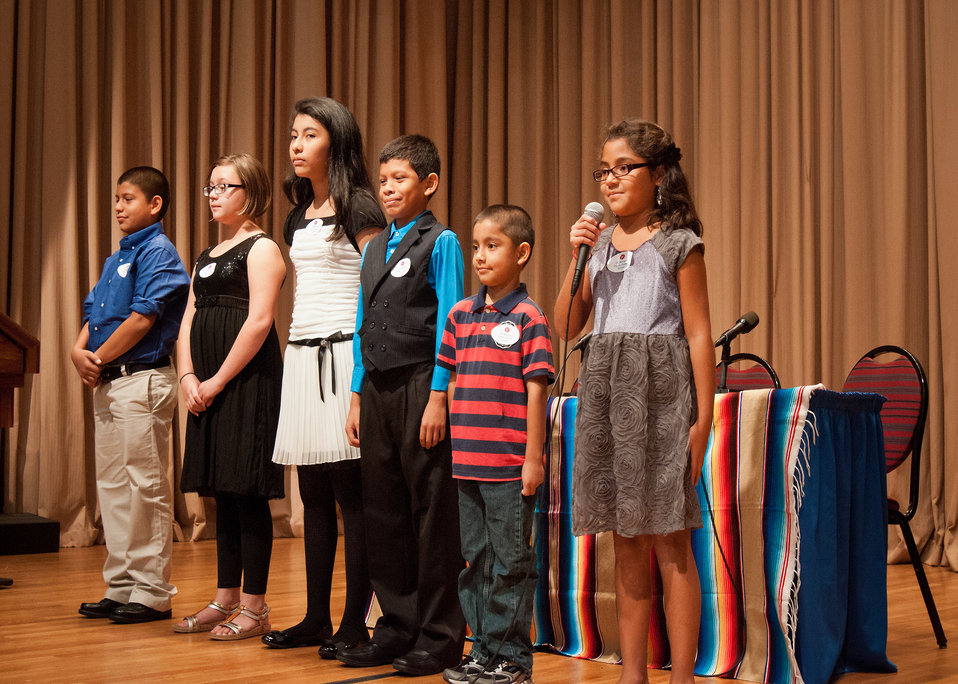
(L to R) District of Columbia Bilingual Public Charter School students Christopher Aguilar, Siena Olero, Marta Moreno, Josue Sorto-Ramos, Bryan Henriquez and Sophia Elescano speaks about the healthy and nutritional qualities at their school at the U. S. Department of Agriculture (USDA) 2012 Hispanic Heritage Month celebration in Washington, D.C. on Thursday Sept. 20, 2012.